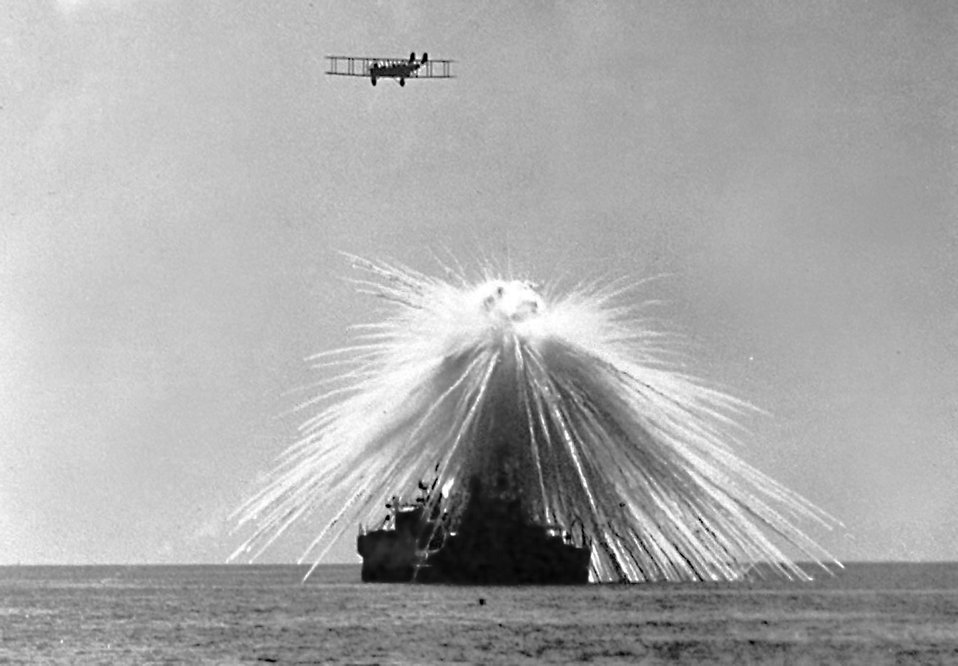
An MB-2 hits its target, the obsolete battleship USS Alabama during tests. On Sep. 27, 1921, still operating with Mitchell’s provisional air brigade, the group’s MB-2 aircraft bombed and sank the ex-U.S. Navy battleship Alabama in Tangier Bay, Chesapeake Bay, Md.